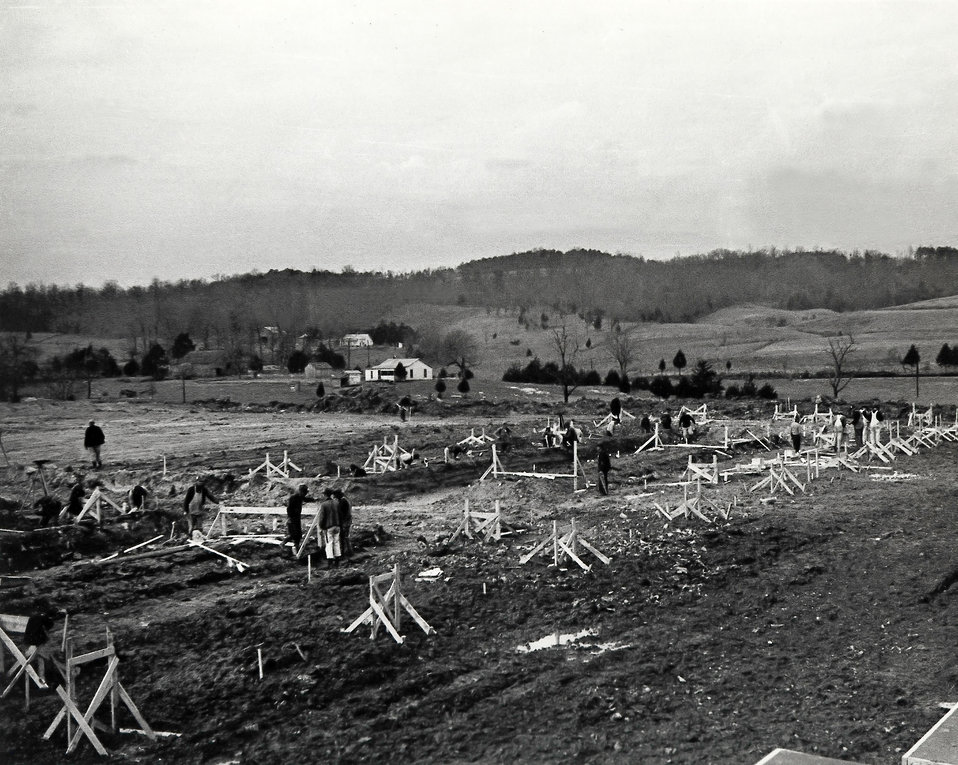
1-26 File #38 12-12-42
Early construction work n first building in Oak Ridge- Headquarters for Manhattan Engineer Destrict